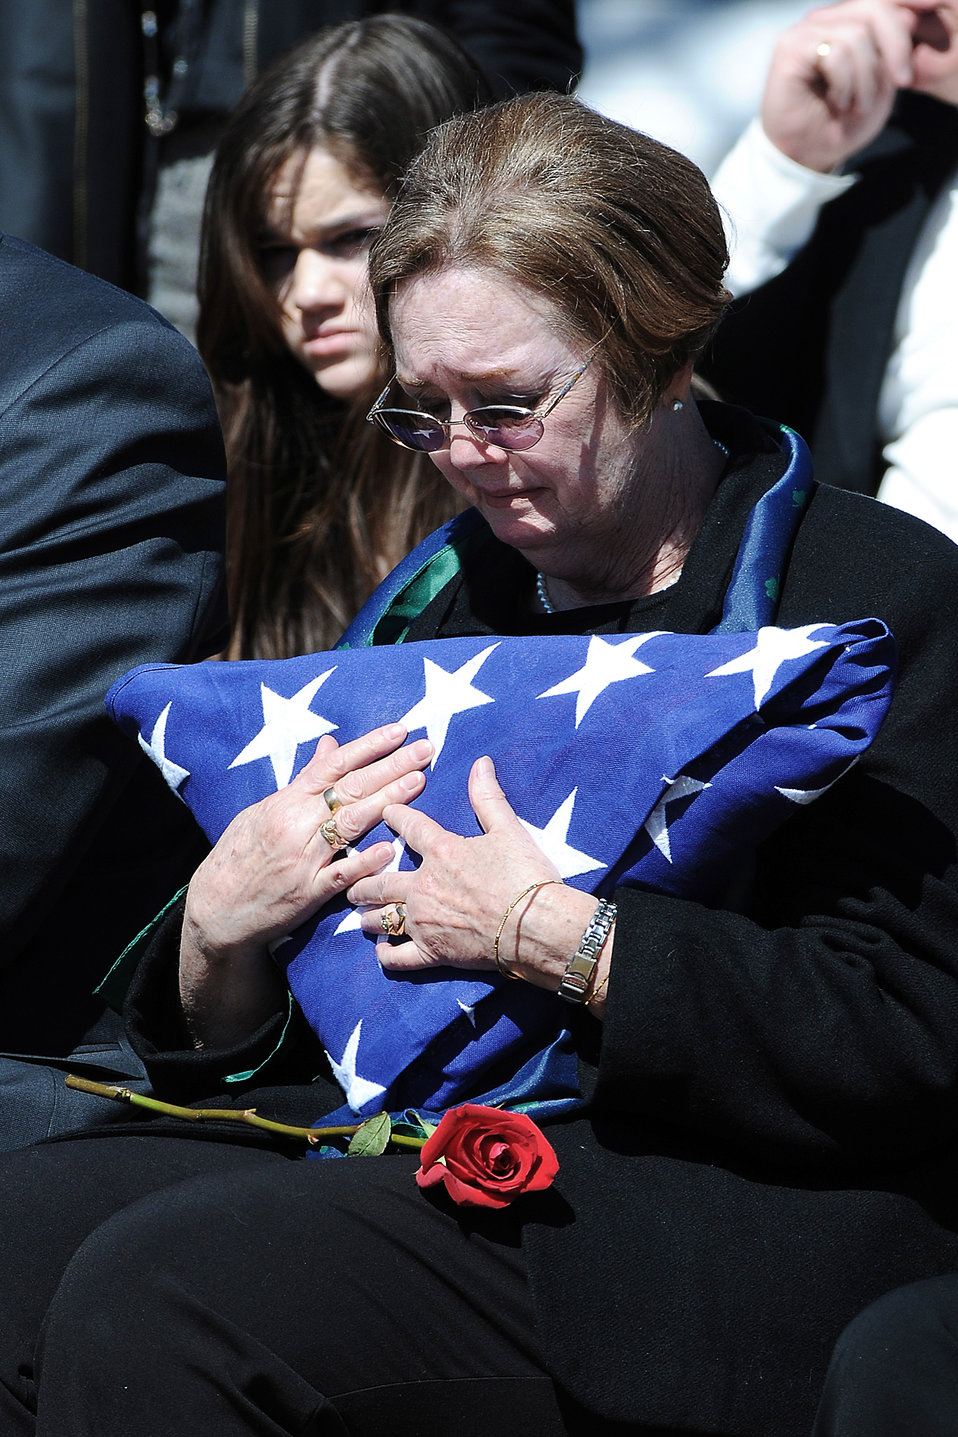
General Clark honored with service

Mary Gannon Walker, daughter of Lt. Gen. Albert P. Clark, holds the American flag during his graveside service March 17, 2010, at the Air Force Academy Cemetery in Colorado. General Clark, who died March 8, was the Academy's sixth superintendent from Aug. 1, 1970 to July 31, 1974. The general was a 1936 graduate of West Point and went on to a flying career after graduation.